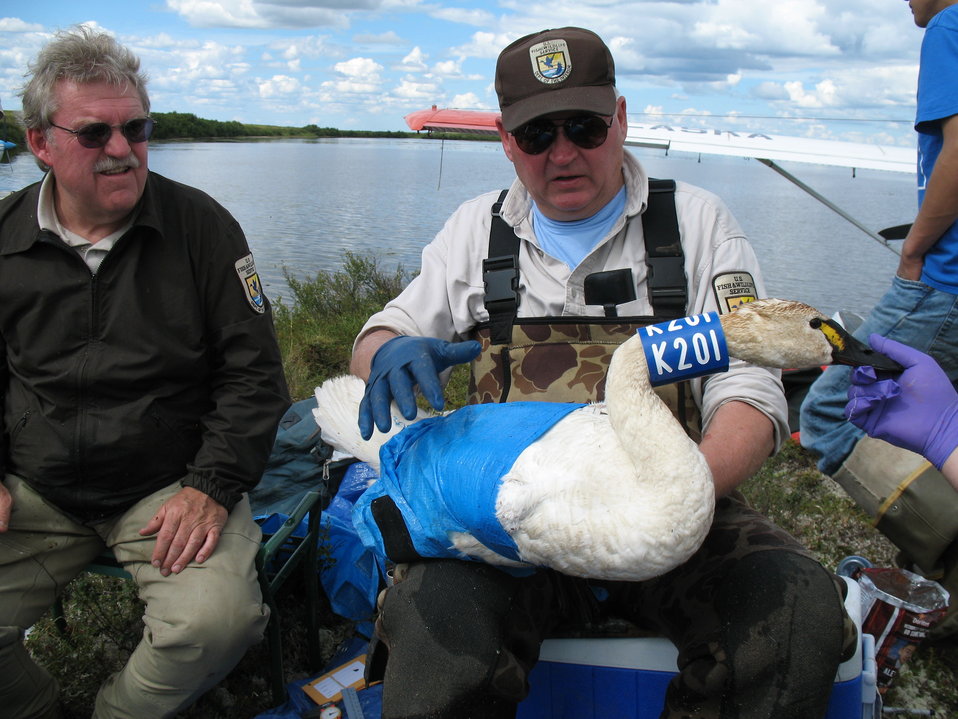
Collared Swan

USFWS Yukon Delta NWR